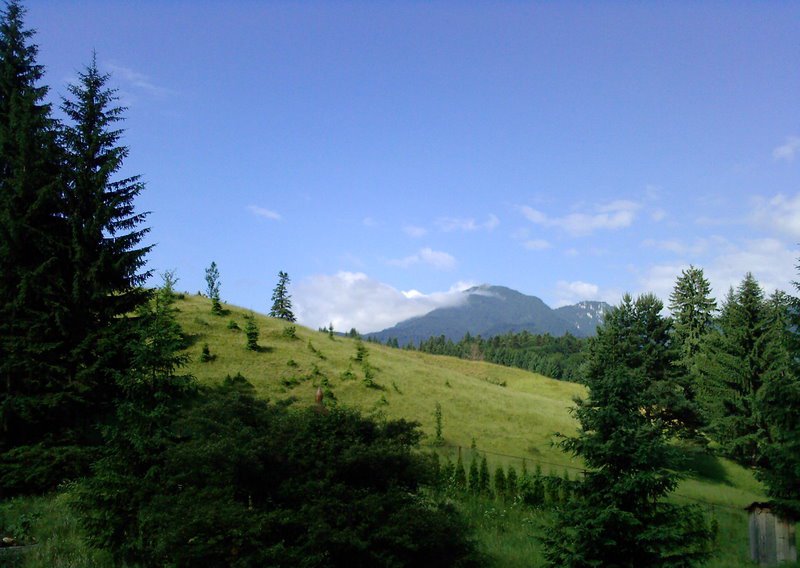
Peisaj montan Timişu de Jos ,Braşov.